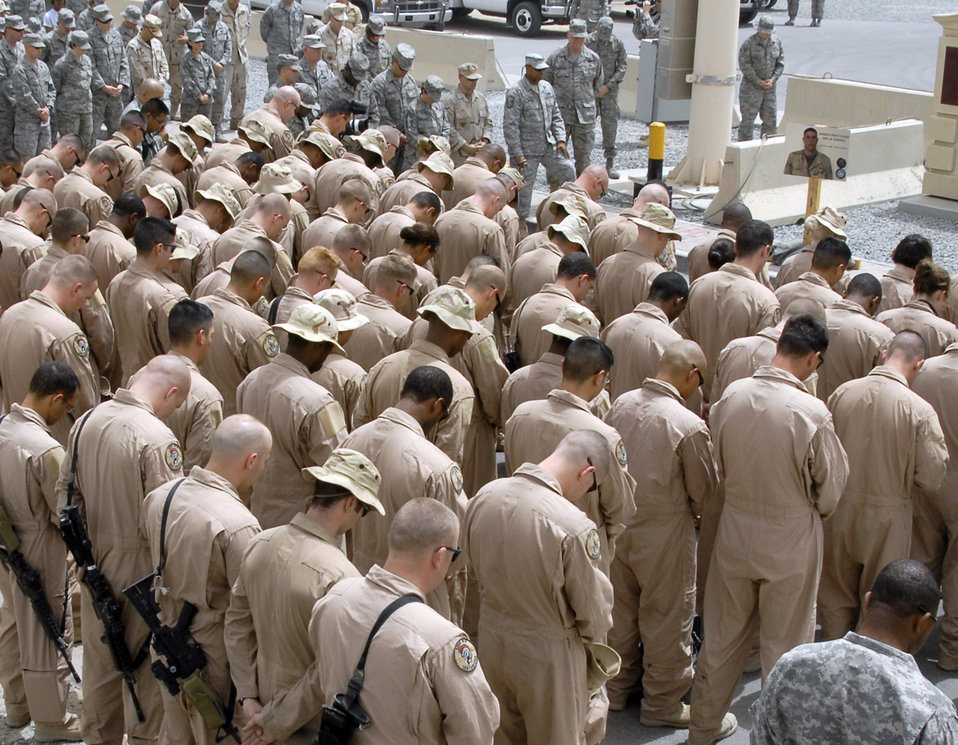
In his honor: Street named for Airmen killed in action

Airmen from the 586th Expeditionary Logistics Readiness Squadron, 70th and 424th Medium Truck detachments and Soldiers from the Army's 1st Theater Support Command, 640th Sustainment Brigade, 1144th Transportation Battalion, along with other Airmen from the 386th Air Expeditionary Wing, take a moment to pray for the family of a fellow Airman who made the ultimate sacrifices during a street dedication ceremony June 10 in Southwest Asia. The ceremony is a tribute to Airman 1st Class Eric Barnes who died June 10, 2007, as a result of an improved explosive device attack on an Air Force convoy about 100 miles south of Baghdad, Iraq.